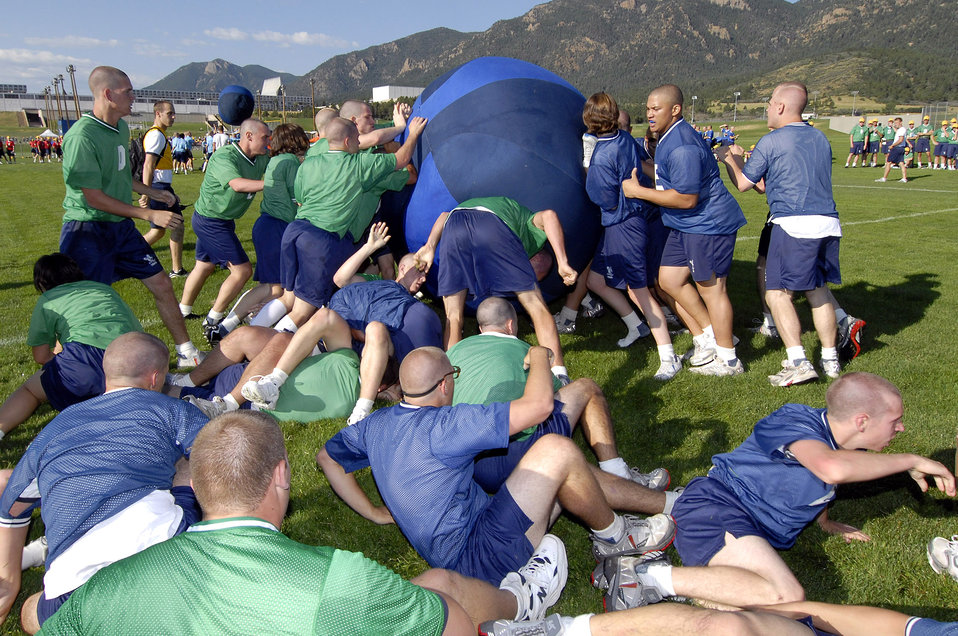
Cadets team up at field day

Basic cadet trainees play push ball during Field Day July 14 at the U.S. Air Force Academy in Colorado. Push ball is a highly charged contest where cadets push a large sphere across a goal line. New cadets are in their first month of training at the Academy and are learning honor, discipline and integrity in addition to physical fitness.